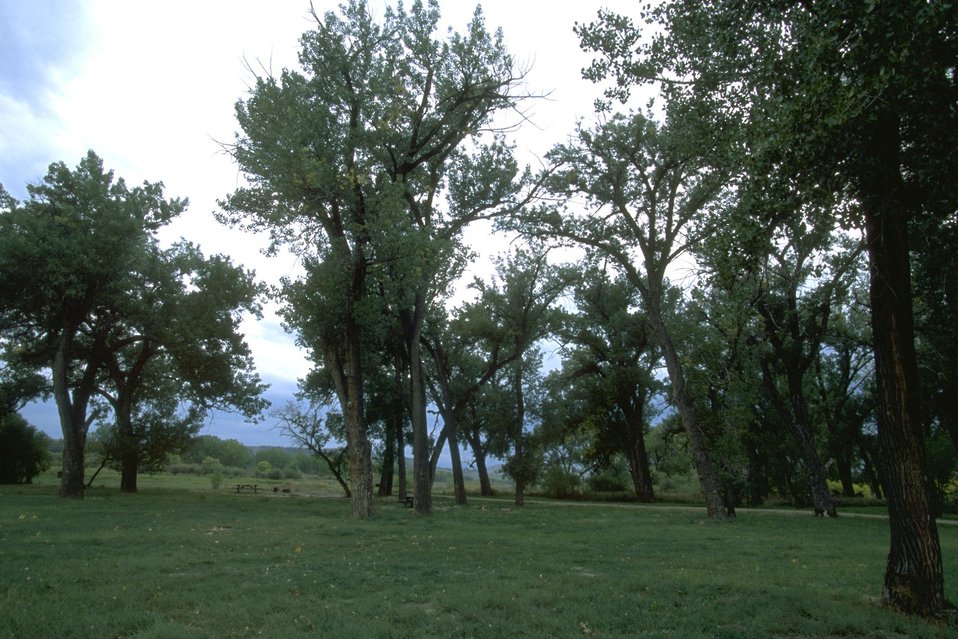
Judith Landing on the Upper Missouri River north of Winifred